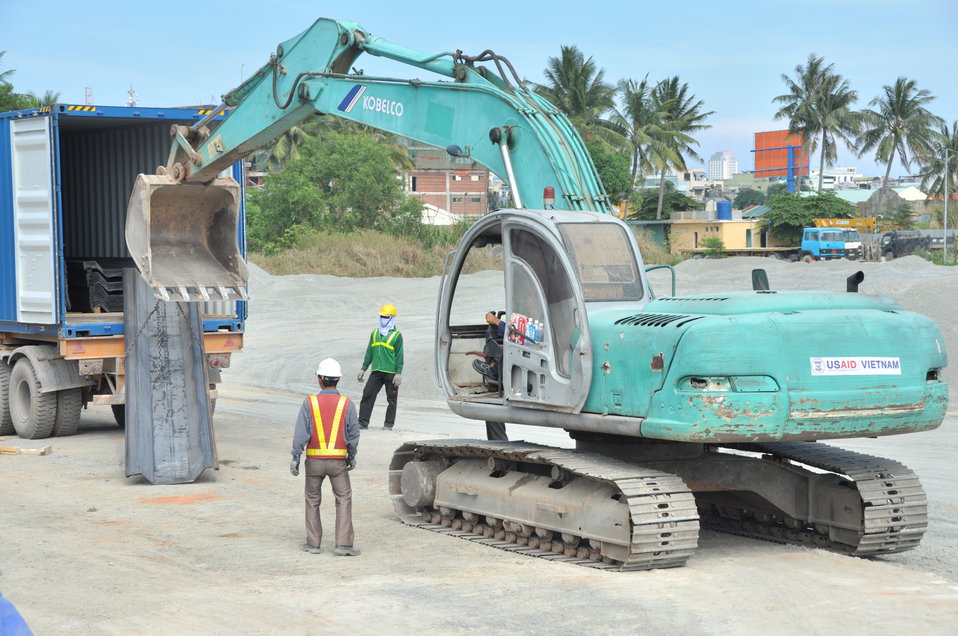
Site construction at the Environmental Remediation of Dioxin Contamination at Danang Airport

Progress at the Danang Airport remediation site
April 23, 2013